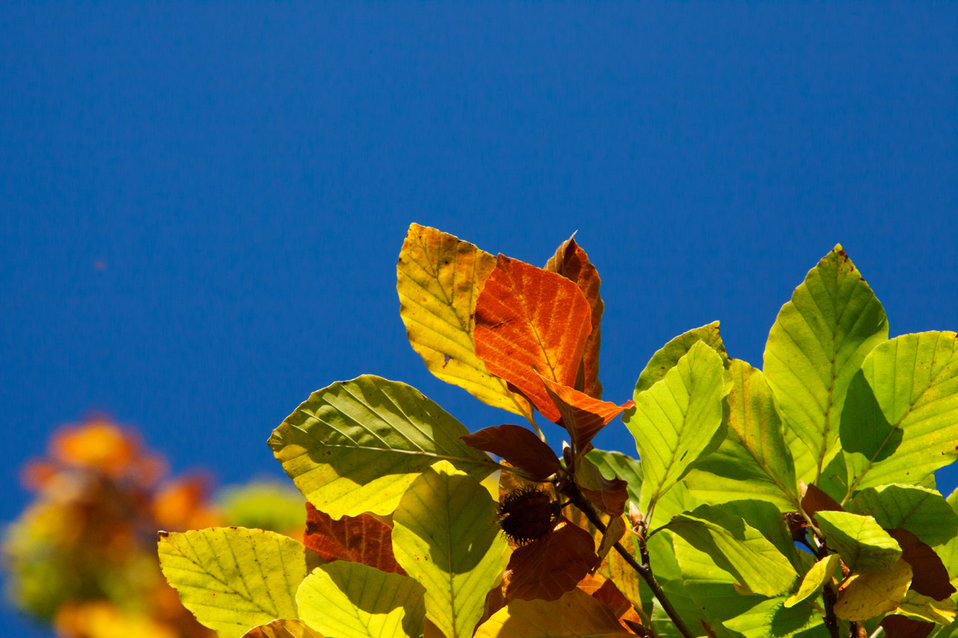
Colorful beech leaves in autumn with blue sky in the background.